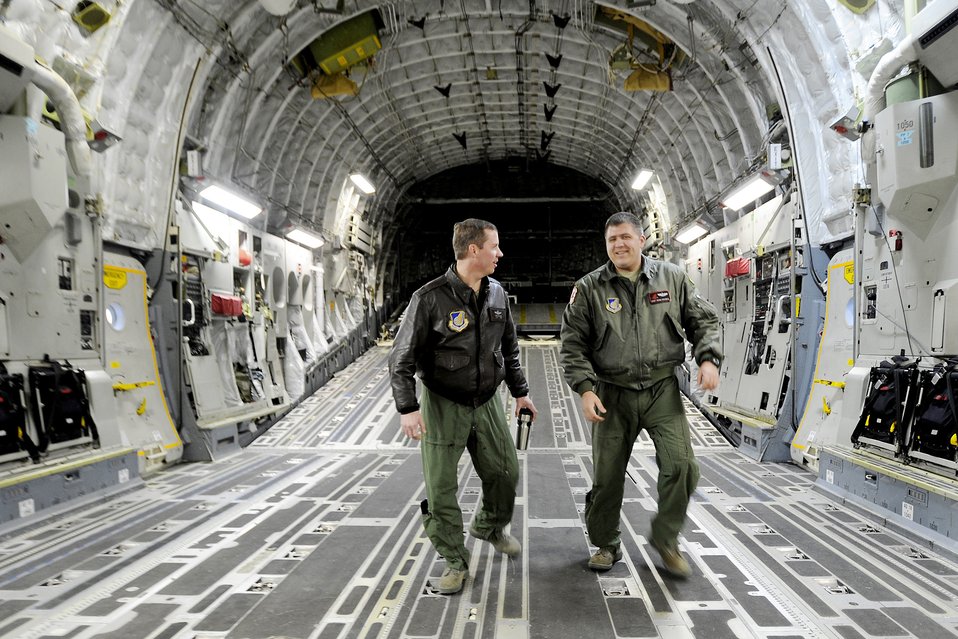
Commander flies C-17

Staff Sgt. Adam Koerner (right) explains the egress procedures of a C-17 Globemaster III to Col. Thomas Bergeson before a flight at Elmendorf Air Force Base, Alaska, March 26, 2010. Colonel Bergeson, 3rd Wing commander took the controls of the aircraft for the first time. Sergeant Koerner is a loadmaster assigned to the 517th Airlift Squadron here.